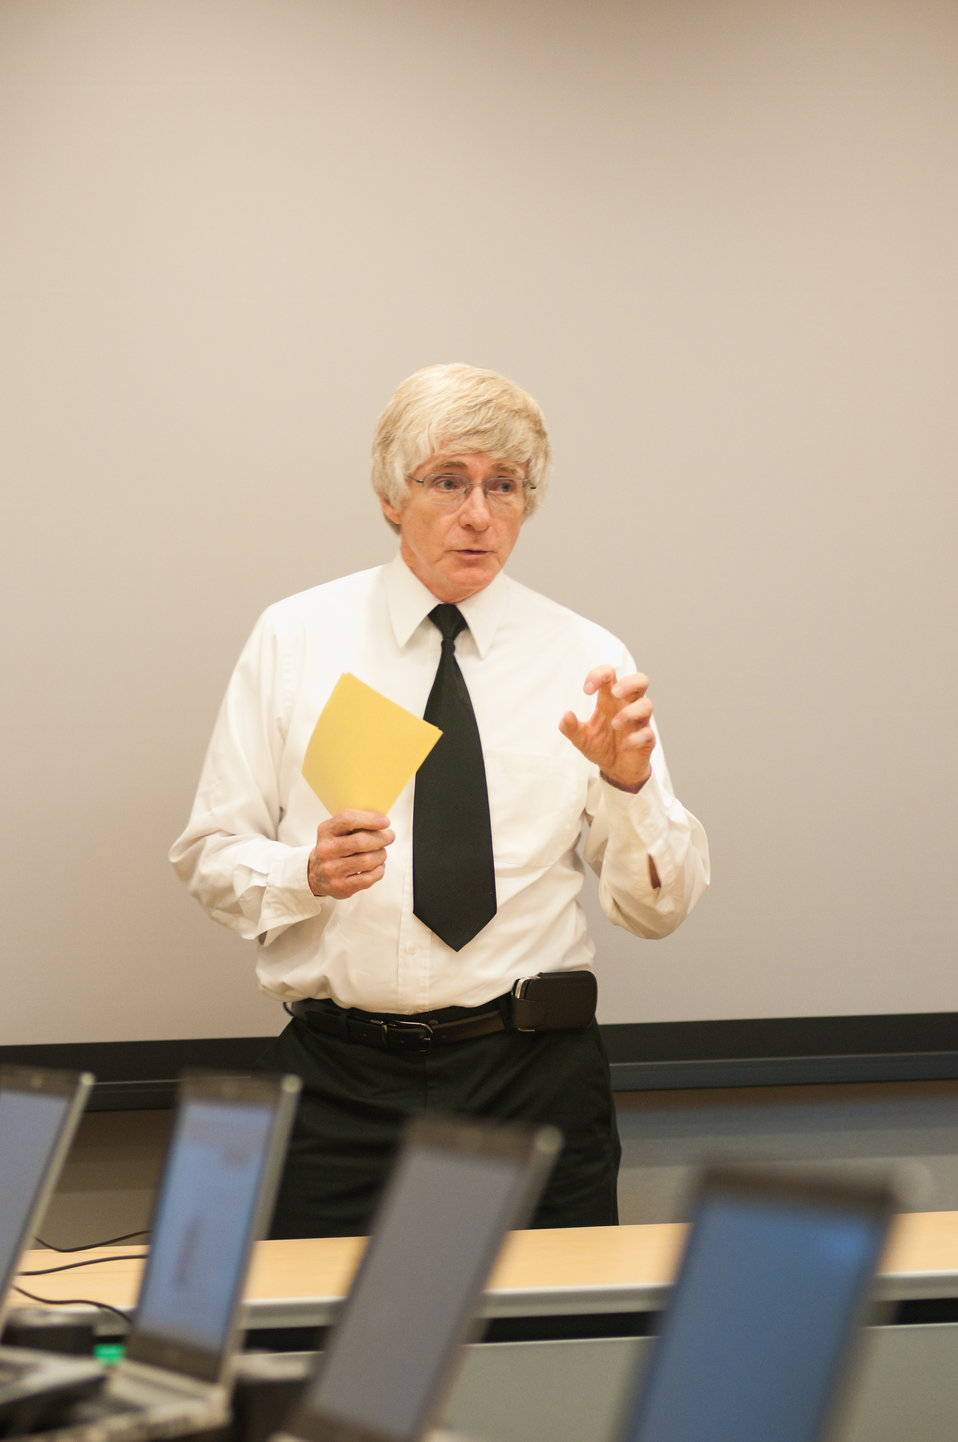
U.S. Department of Agriculture (USDA) National Institute of Food and Agriculture (NIFA) Strategic Tribal College Competitive Grant Programs Program Leader Tim Grosser focuses on the over 100 competitive grant programs available to Tribal Colleges and University’s and the work performed with NIFA Endowment Grants at the USDA 2013 Land-Grant Development Tribal Fellows Program held in Washington, D.C. on Monday, Jun.03, 2013.